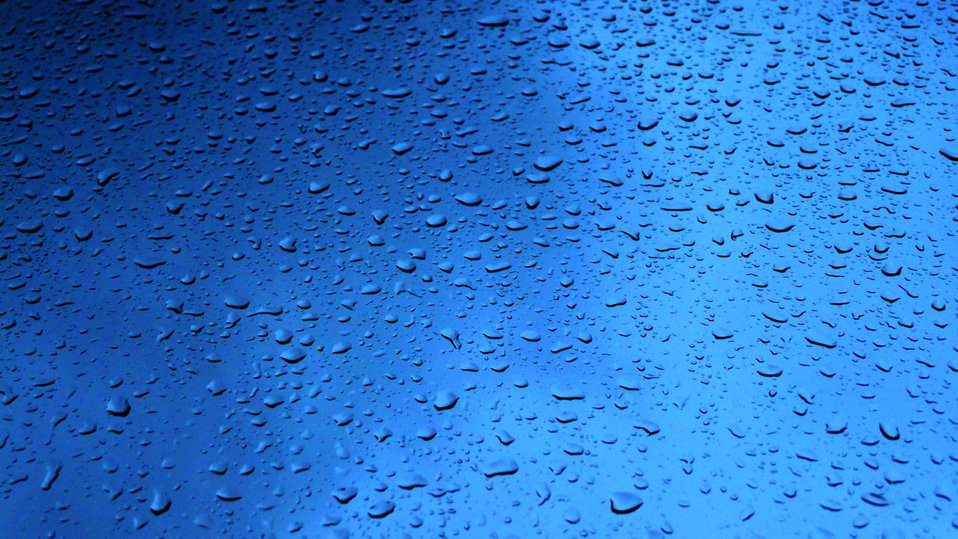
Rain drops on glass.